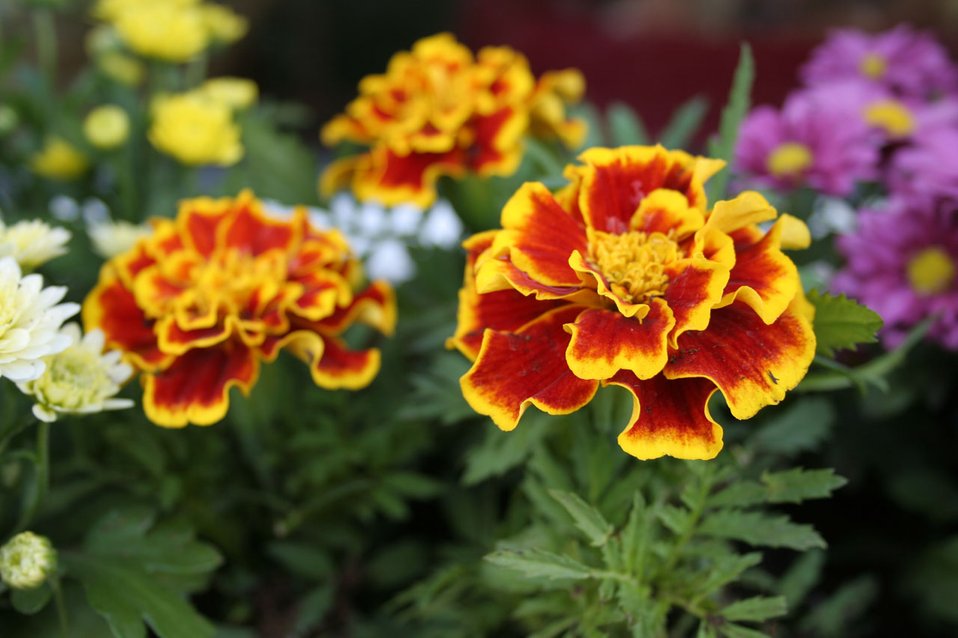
American marigold

A detailed photo of several american marigold flowers.